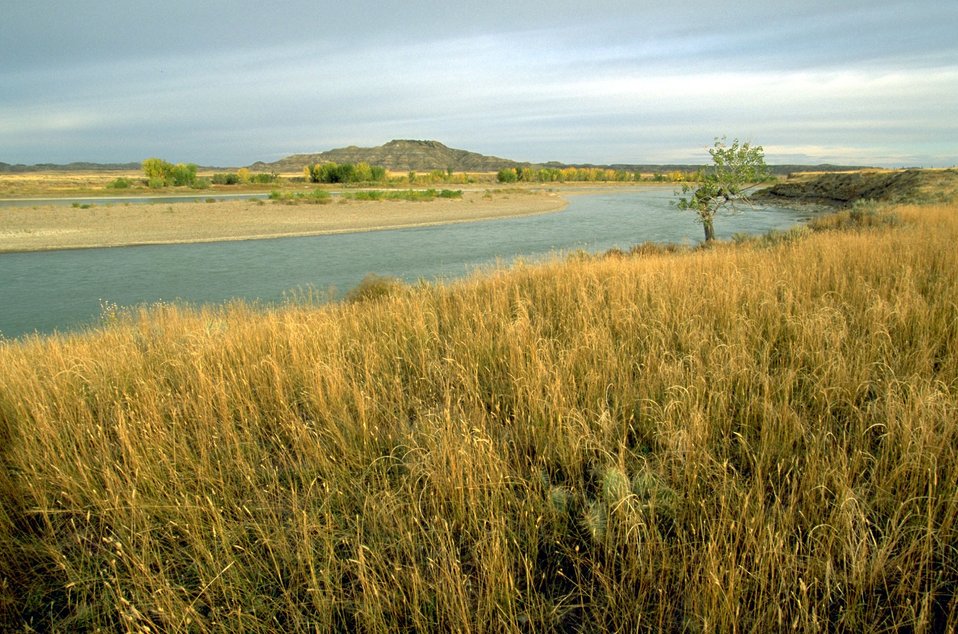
Tall grass along the bank of the Yellowstone River